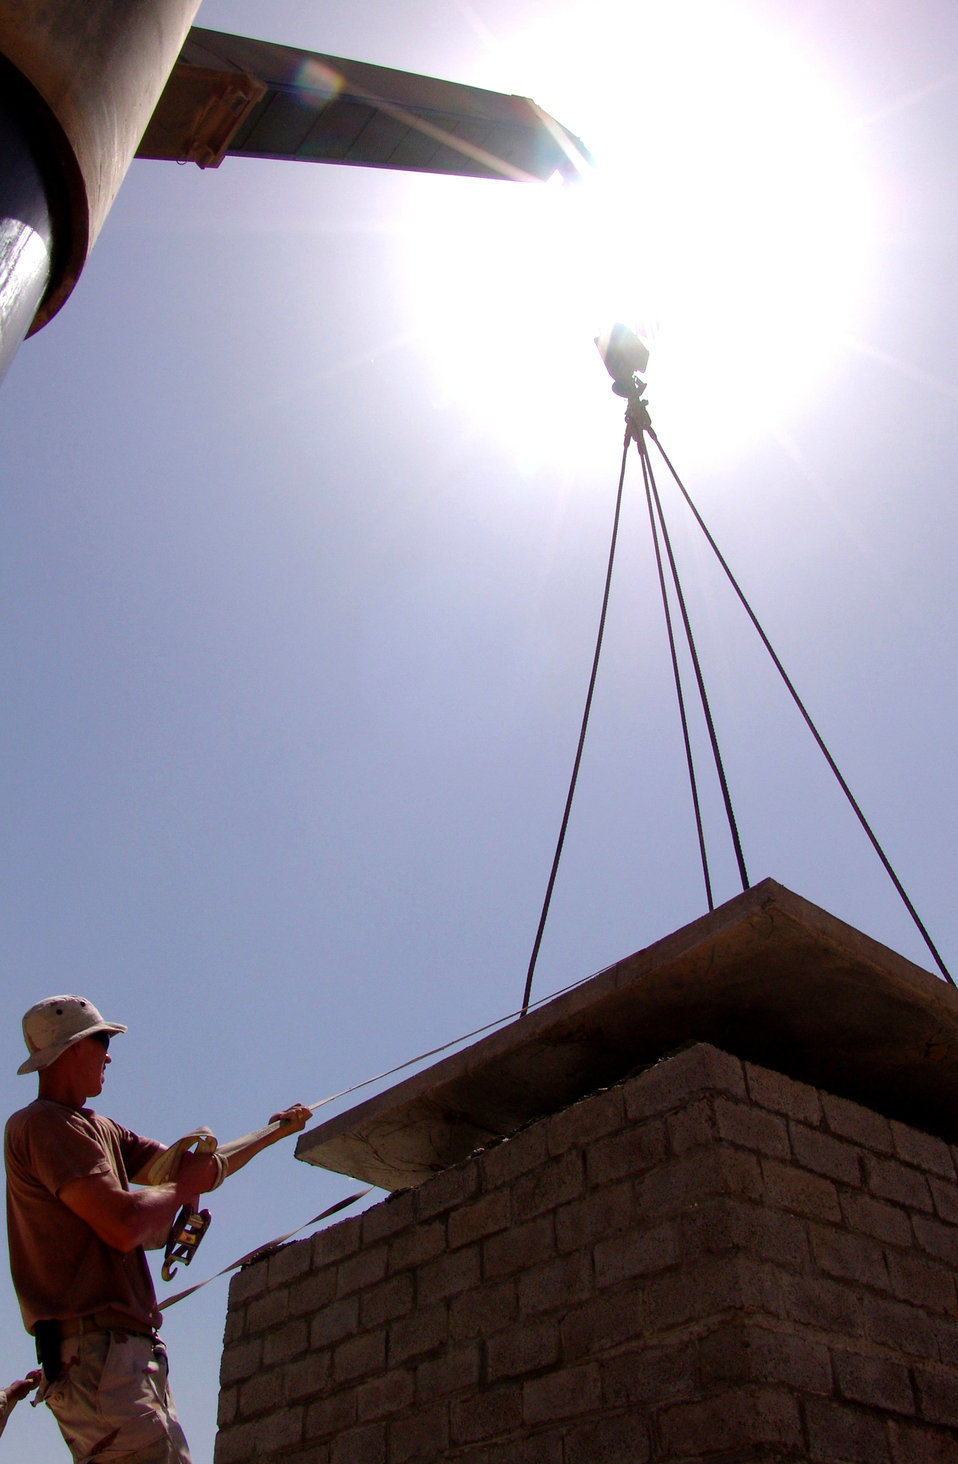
Red Horse engineers build Iraqi future

BAGHDAD, Iraq -- Senior Airman Chris Tobin guides a concrete roof onto a new network control center cable vault. He is deployed to the 557th Expeditionary Red Horse Squadron from the Pennsylvania Air National Guard.